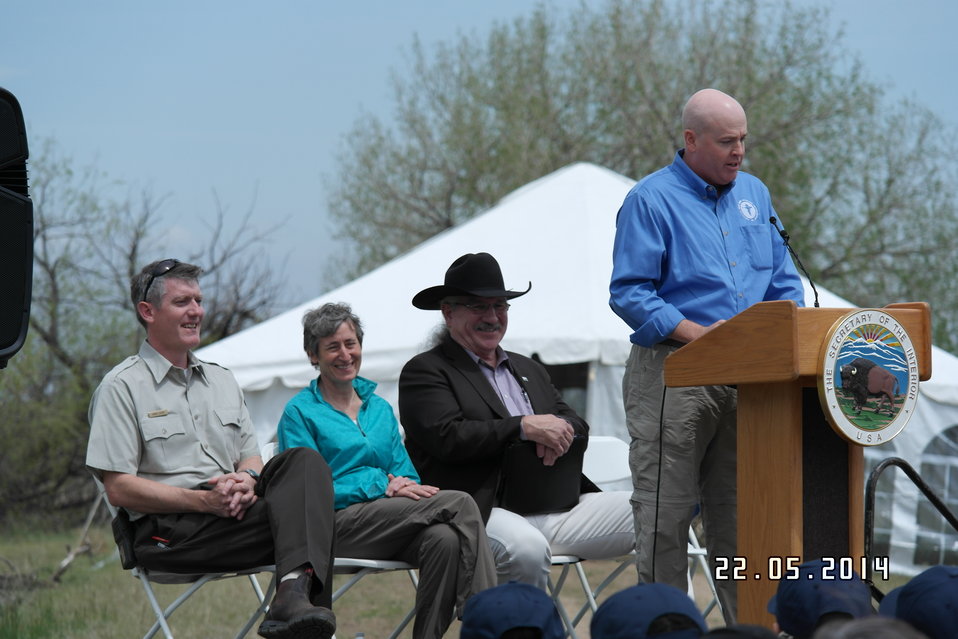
Secretary Jewell Announces $6.7 for Youth Conservation Jobs

Jewell made the announcement at an event at Rocky Mountain Arsenal National Wildlife Refuge outside Denver, Colorado, where she was joined by U.S. Department of Agriculture (USDA) Deputy Under Secretary for Natural Resources and the Environment Arthur “Butch” Blazer; Greg Knadle, Vice President for Government Relations of the National Fish and Wildlife Foundation (NFWF); Refuge Manager David Lucas and youth corps members of Groundwork Denver.